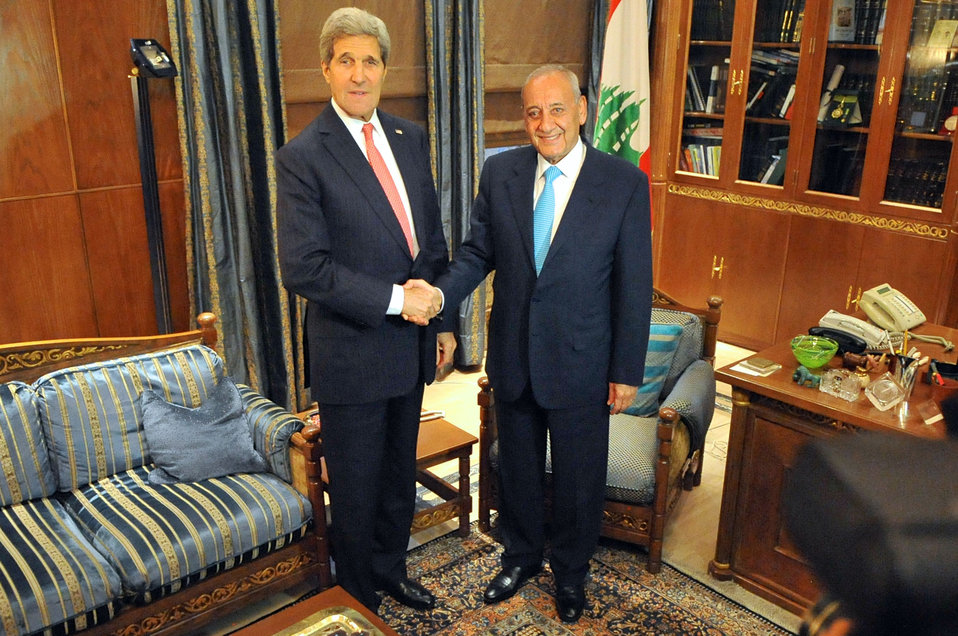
Secretary Kerry Meets With Lebanese Parliamentary Speaker Berri in Beirut

U.S. Secretary of State John Kerry meets with Lebanese Parliament Speaker Nabih Berri in Beirut, Lebanon, on June 4, 2014.